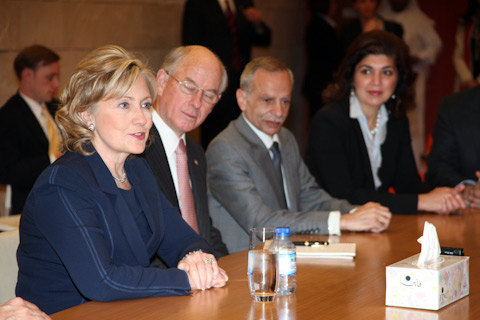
Secretary Clinton Travels to Qatar and Saudi Arabia

U.S. Secretary of State Hillary Rodham Clinton meets with members of the Al Jazeera Editorial Staff at Carnegie Mellon Qatar prior to her Townterview there in Doha, Qatar February 15, 2010.